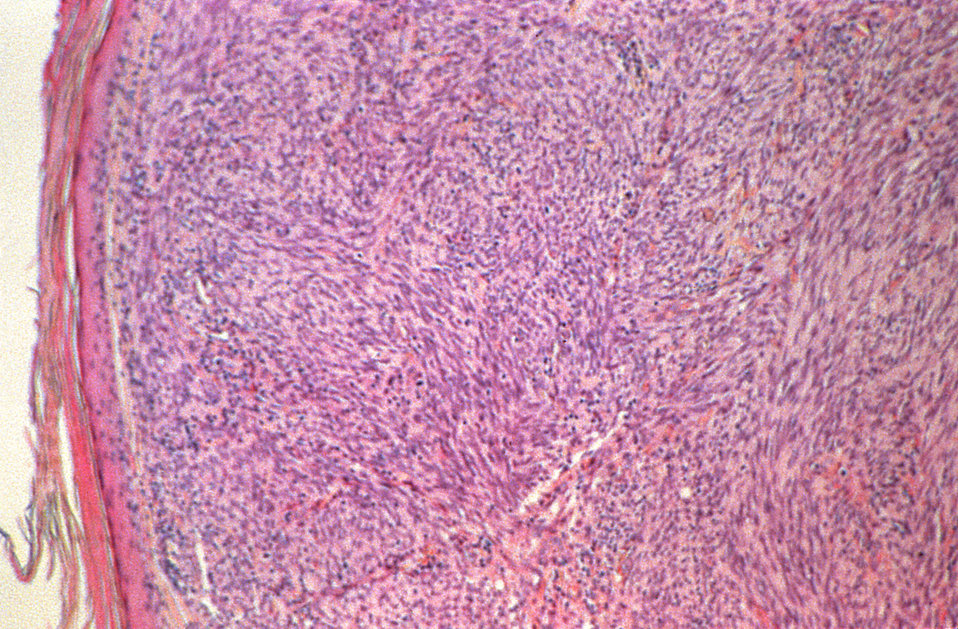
Under medium magnification, this micrograph of a skin biopsy shows the cytoarchitectural changes found in Kaposi's sarcoma.